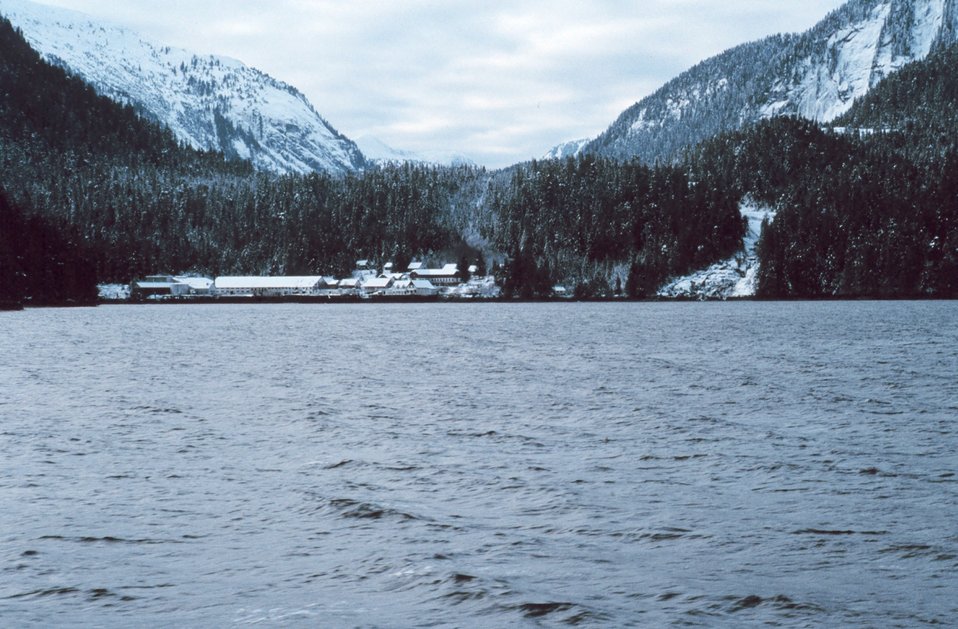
British Columbia salmon cannery